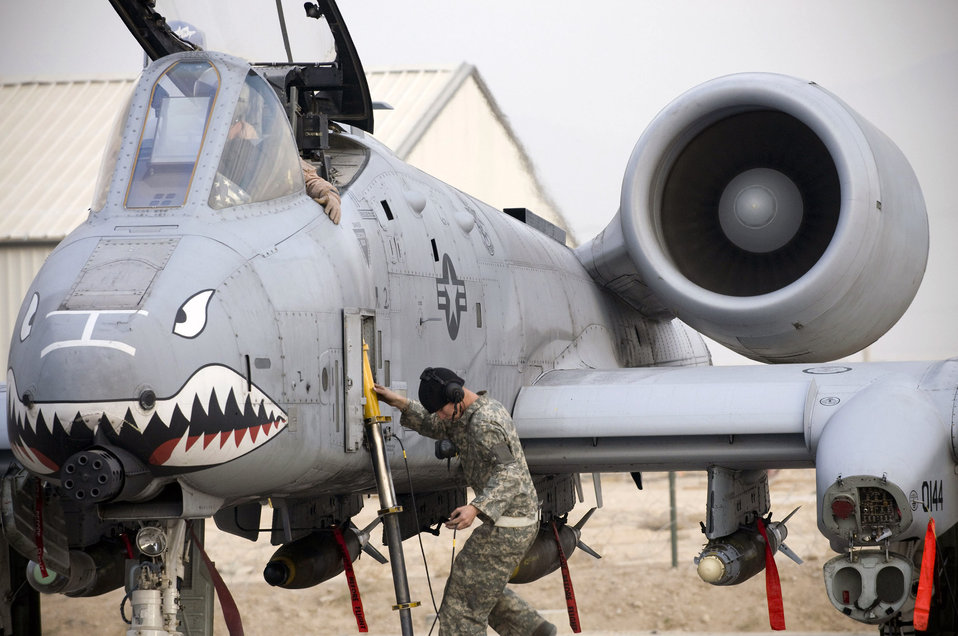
Thunderbolts active during the holidays

Airman 1st Class Michael Ward climbs the crew ladder to assist Capt. Eric Fleming get ready for a mission in an A-10 Thunderbolt II Dec. 2 at Bagram Airfield, Afghanistan Captain Fleming is the assistant wing weapons and tactics officer and an A-10 pilot. He is deployed from Moody Air Force Base, Ga., and hails from Philadelphia. Airman Ward is an A-10 crew chief deployed from Moody AFB, Ga. He hails from Cincinnati.